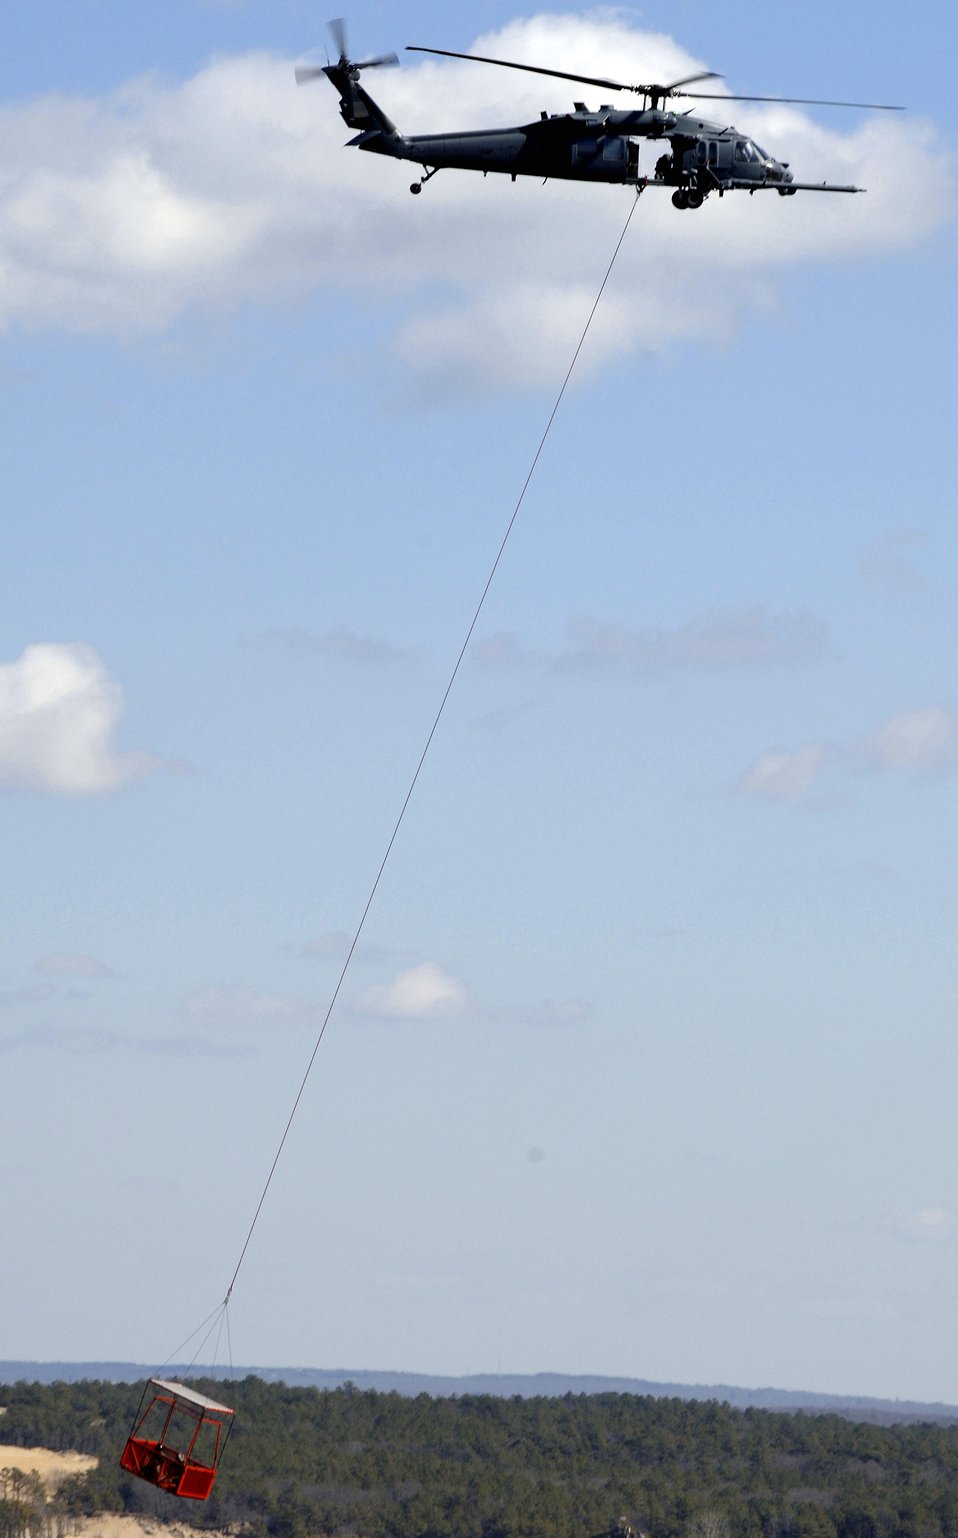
Heli-Basket undergoes testing

An HH-60 Pave Hawk helicopter carries a rescue basket during certification training at Westhampton Beach, N.Y., Tuesday, Feb. 28, 2006. Volunteers from the 106th Rescue Wing at Francis S. Gabreski Field, N.Y., tested the basket so it can be certified for use in rescuing people. It was the first time humans were used in the testing.